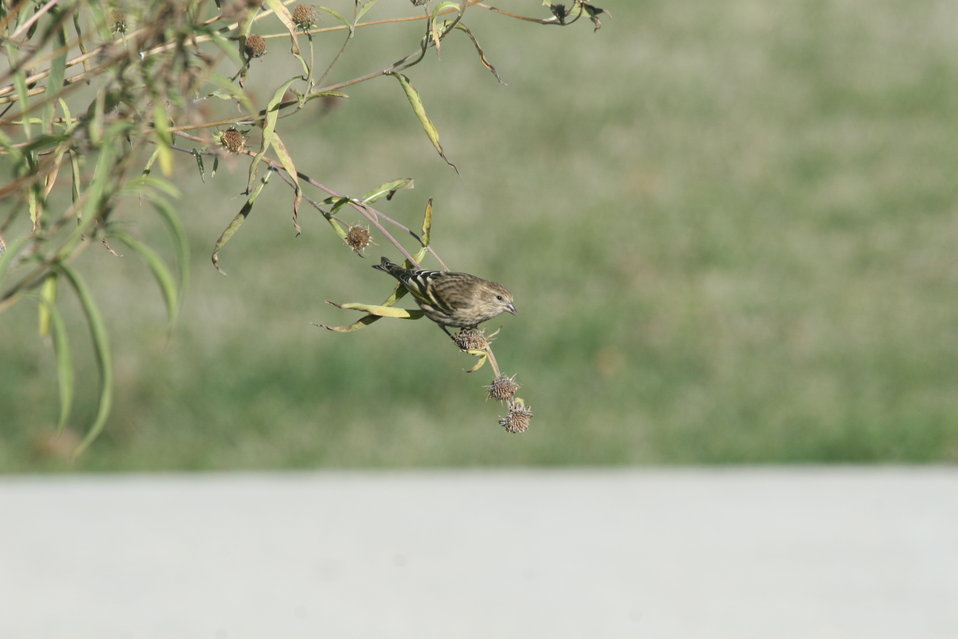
Who's at the Bird Feeder? Pine Siskin

Pine siskins have been devouring seeds from the maxmillian sunflower plants that surround refuge headquarters.